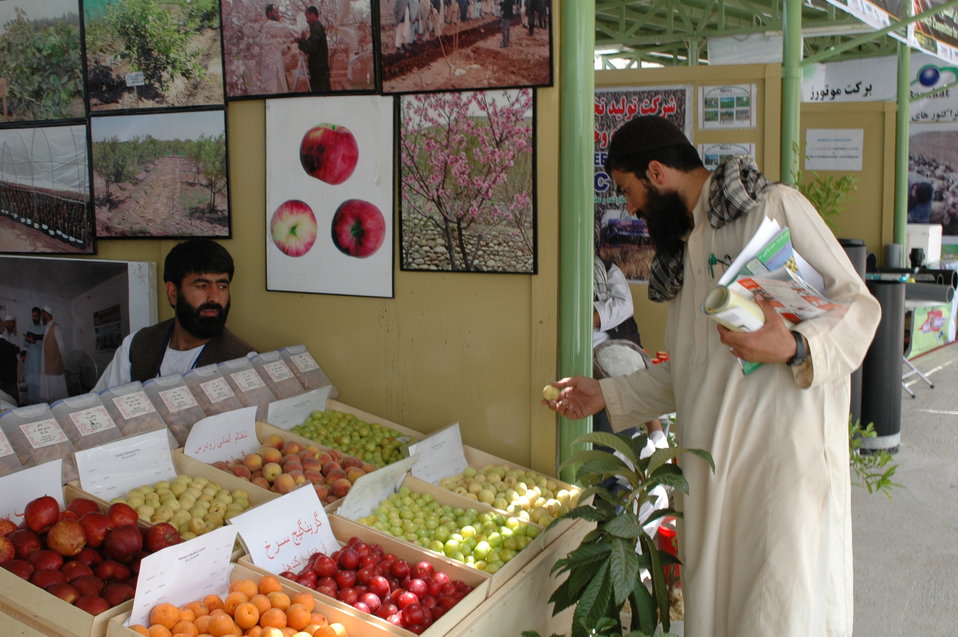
AgFair fruit vendor 052109 jfossler

On May 20, 2009, Ambassador Eikenberry joined government officials, farmers, agribusiness representatives, and international investors at the launch of the Kabul International AgFair on May 20. Held at the Ministry of Agriculture, Irrigation and Livestock’s Badam Bagh Demonstration Farm in Kabul, the fair showcases Afghanistan’s wealth of fresh produce, provides lucrative business opportunities, and demonstrates innovative agricultural technologies. It is expected to attract more than 50,000 participants from May 21-22.

U.S. Ambassador Karl Eikenberry and Afghan Acting Minister of Agriculture, Irrigation and Livestock (MAIL) Saleem Kunduzi gave opening remarks at the AgFair’s launch. “The United States Government is co-sponsoring national and regional AgFairs like this one to encourage trade and generate business opportunities in the agriculture sector,” Ambassador Eikenberry said. “In a country that is 80 percent rural, promoting licit crops and agriculture sector job creation are two essential steps to successful development in the region.”

Member of Parliament Abdul Salam Qazizada offered bold remarks, stating that we need to engage more with farmers in every province throughout the country.

Following the ceremony, Ambassador Eikenberry visited a number of vendors at the fair with Acting Minister Kunduzi and Mr. Qazizada. In speaking with farmers displaying their produce, Ambassador Eikenberry found that many have increased yields due to USAID assistance, have found regional buyers for their produce, and were grateful for the opportunities that AgFair provides.

Ambassador Eikenberry also discussed the state of agriculture with Minister Kunduzi and Mr. Qazizada. They agreed that while some progress has been made, there is a great deal more work to be done. Ambassador Eikenberry reiterated from his speech that USDA Secretary Vilsack recently met with Minister Rahimi to discuss the U.S. commitment to agriculture development. In a message to the Afghan public, Secretary Vilsack stressed that the USG aims to play a leading role by bringing more agriculture experts to the provinces and supporting agriculture research such as the Badam Bagh Demonstration Farm. Additionally, he looks “forward to working together to increase agricultural productivity, which will result in more jobs throughout the entire value chain, and a better quality of life for the citizens of Afghanistan.”

The United States Government is proud to support Afghan agriculture. Since 2002, America has provided more than 1 billion dollars in assistance to agriculture and rural development. AgFairs like the one Ambassador Eikenberry visited creates awareness of Afghanistan’s expanding agricultural sector, promotes new agricultural technologies that increase productivity, and provides a forum to connect farmers to local and international buyers. These results will contribute to Afghanistan’s prosperity.

We are already seeing the results of these fairs. Since 2007, Afghanistan’s agricultural fairs have attracted more than 500,000 participants from across the nation and the world, generated millions of dollars in sales of the country’s high-value produce, and provided participants with a competitive edge in one of the fastest growing markets in Central Asia.

As Ambassador Eikenberry stated, “The word is out – with over 180 international businesses represented at this fair, it is obvious that Afghanistan has sparked the interest, and appetite, of the world.”